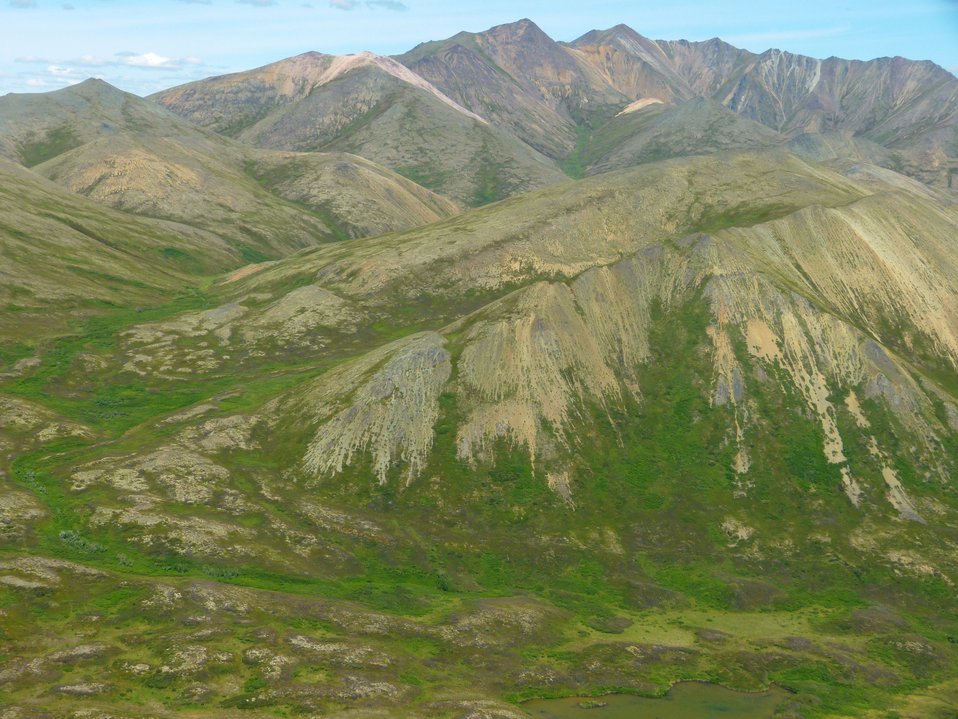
Kilbuck Mountains, Yukon Delta National Wildlife Refuge

Photo by: Kristine Sowl,
USFWS, Yukon Delta NWR, July 11, 2013